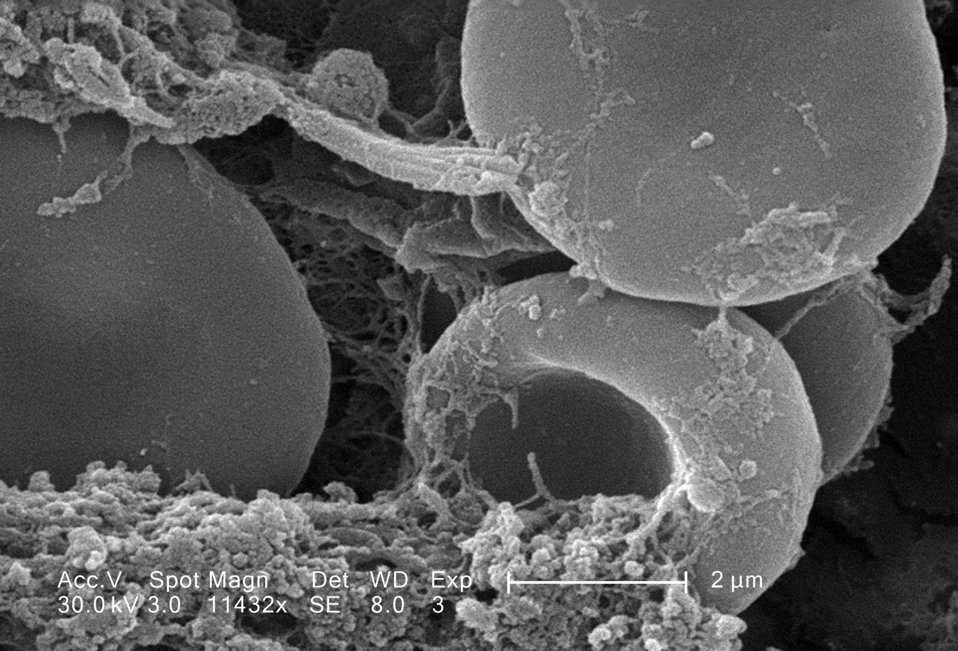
This scanning electron micrograph (SEM) depicted a number of red blood cells found enmeshed in a fibrinous matrix on the luminal surface of an indwelling vascular catheter; Magnified 11432x.